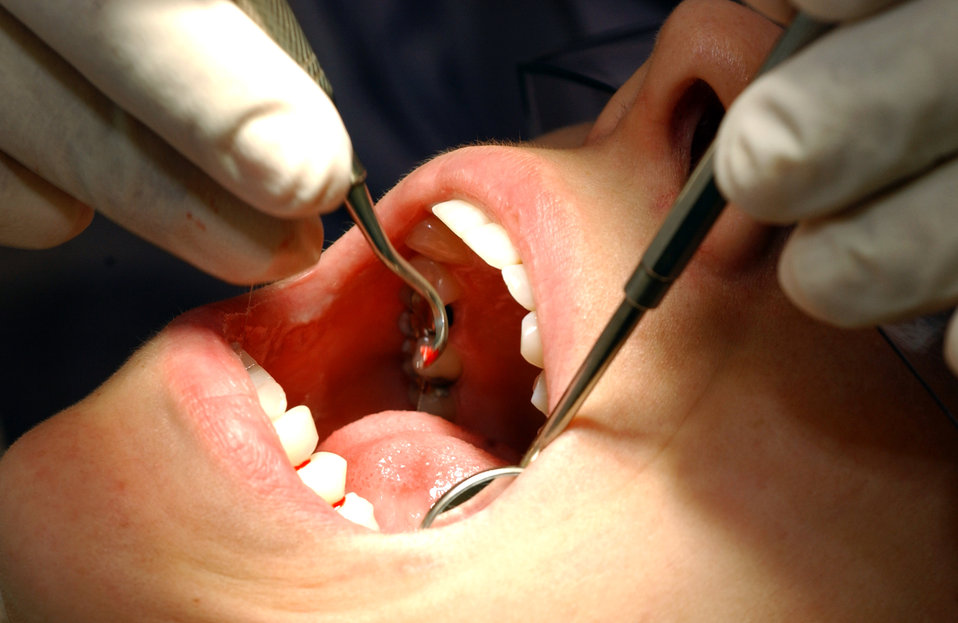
Dental details

Senior Airman Lauryn Hashem receives a periodic oral exam at Royal Air Force Lakenheath, England, on July 31. The exam includes a cleaning, scaling, polishing, flossing, fluoride treatment and instruction on proper oral hygiene. Airman Hashem is an aircrew life support journeyman for the 492nd Fighter Wing.